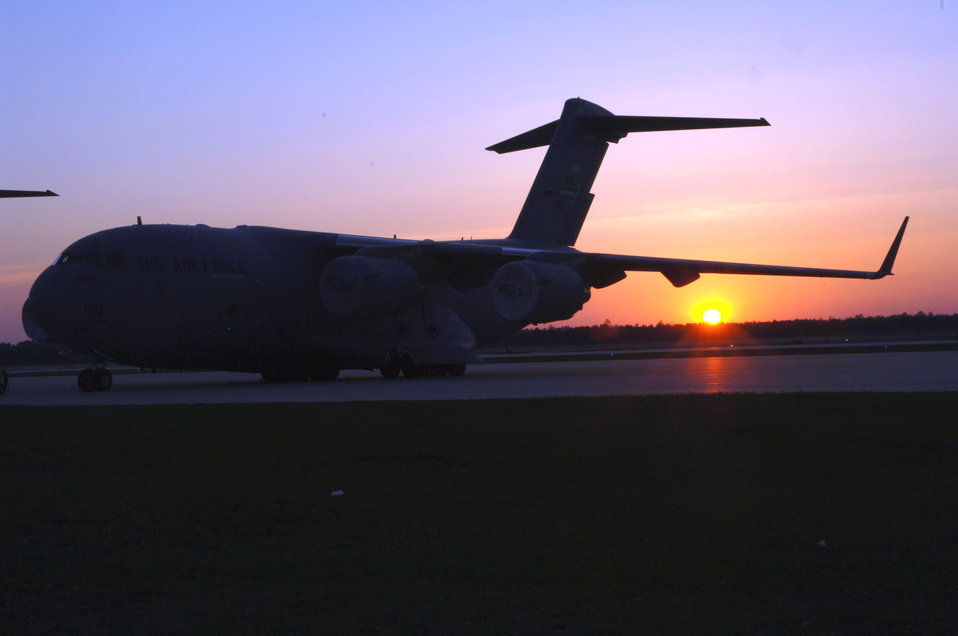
Exercise Thunderbolt

A C-17 Globemaster III from the 62nd Airlift Wing at McChord Air Force Base, Wash., sits on the runway as the sun rises in Alpena, Mich., during Exercise Thunderbolt on Tuesday, May 9, 2006.